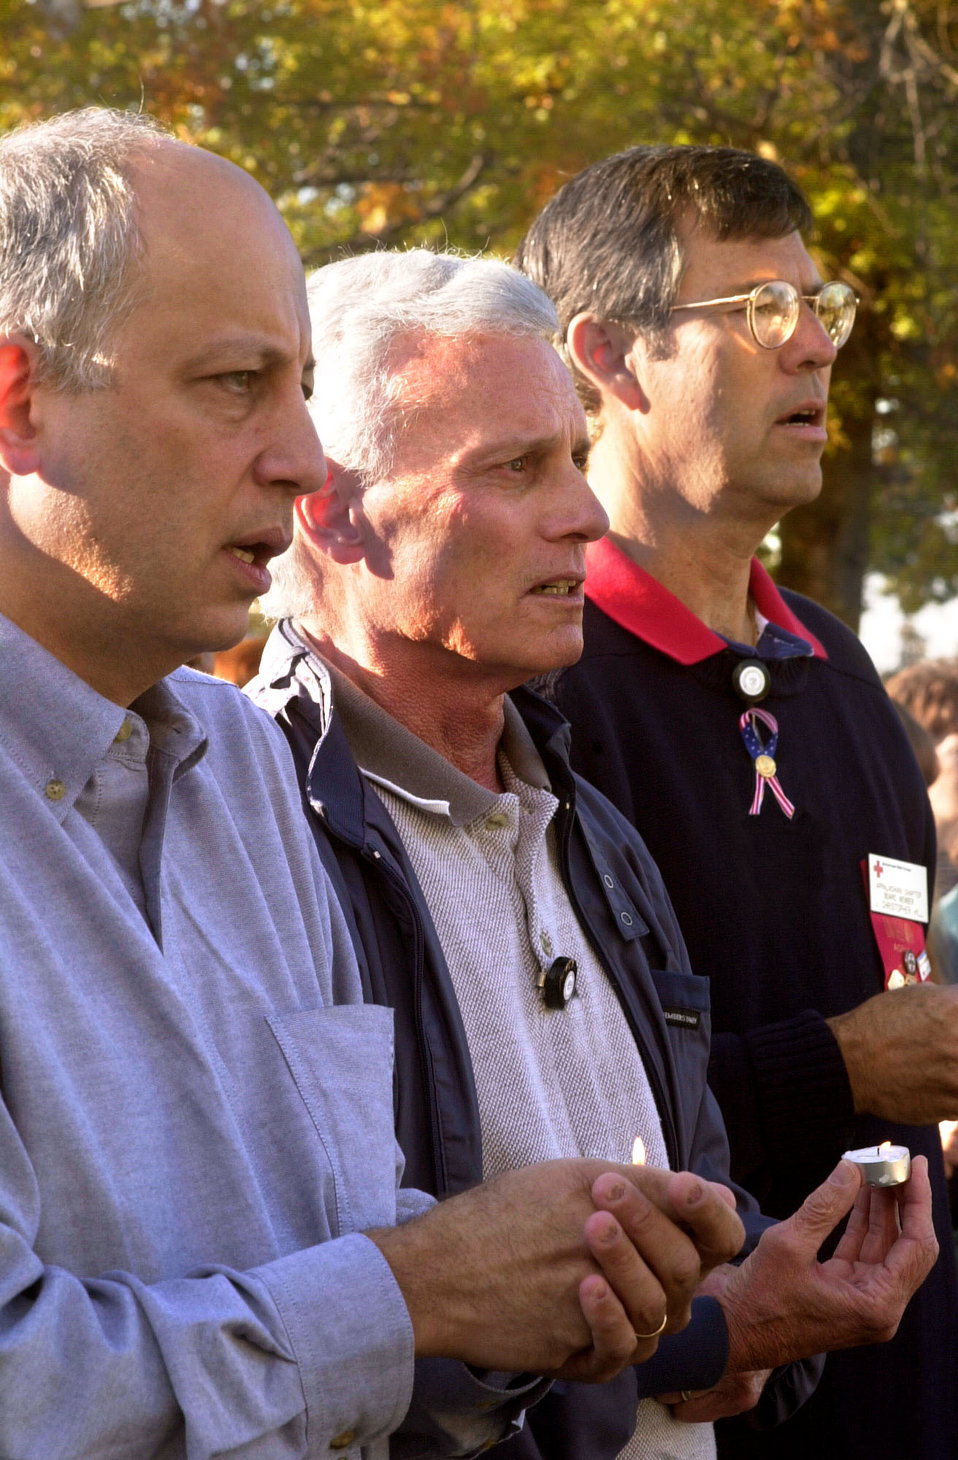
Flag Pole Pray after 911 Federal Building

01-249-2298 DOE photo by Lynn Freeny
Oak Ridge Tennessee 10/2/2001